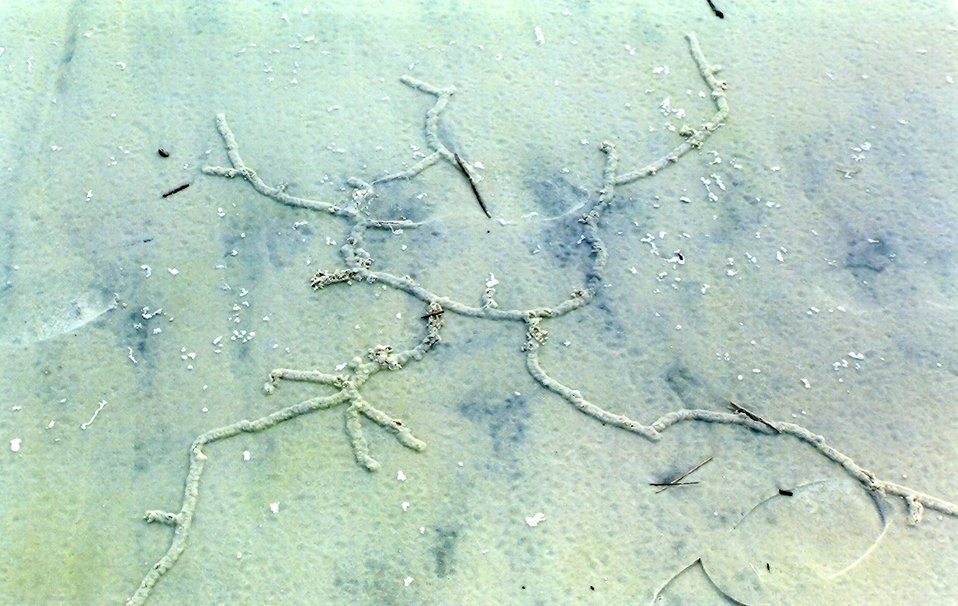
Pencil-sized tunnels caused by some type of burrowing animal caused a series of hieroglyphic appearing designs on the beach.